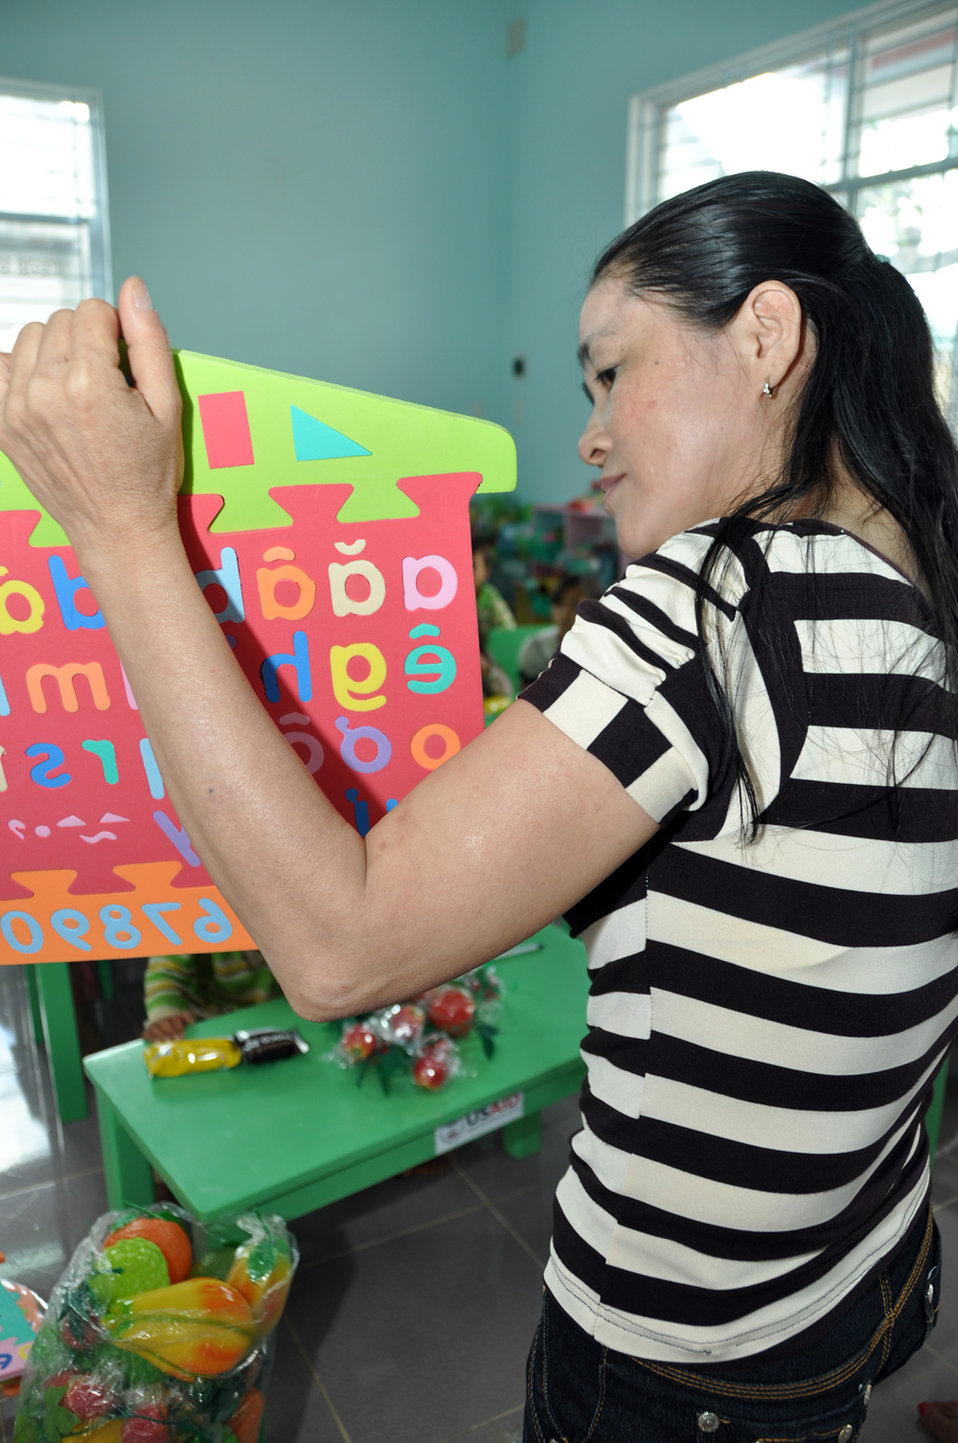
USAID contributes to refurbished pre-schools and teacher training in Vietnam